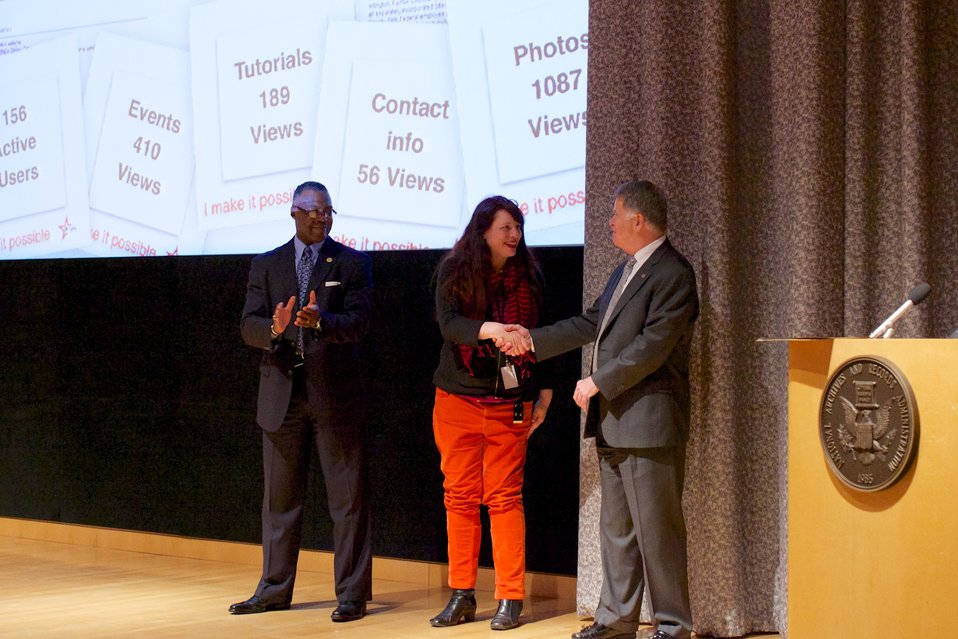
CFC Recognition Event